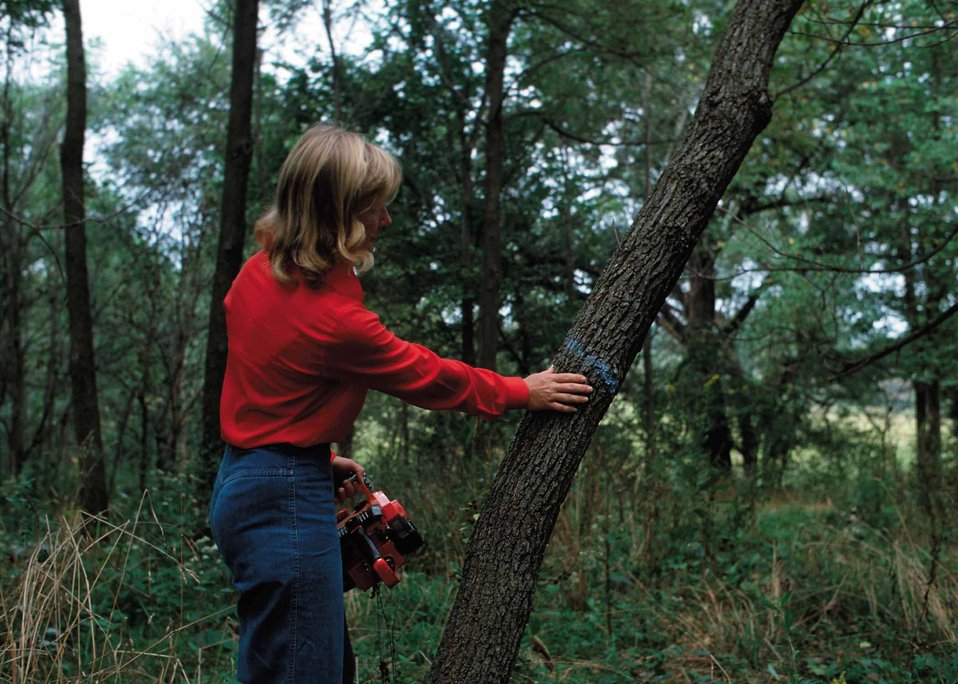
Thinning timber stands by removing poor trees in an important management technique.